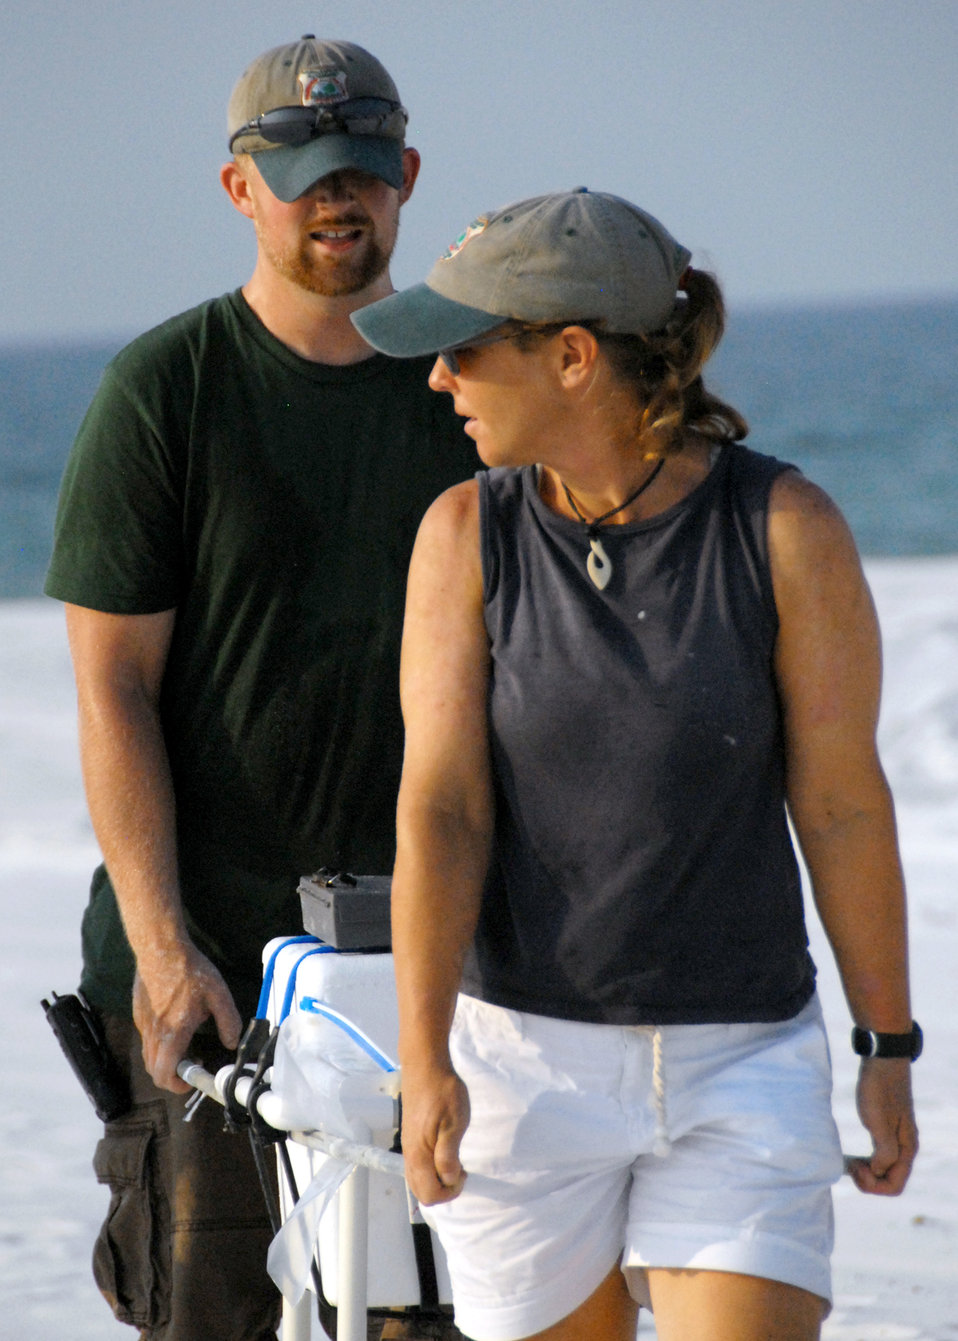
Sea turtles

Kathy Gault and Dusty Varble carry out a cooler filled with sea turtle eggs after removing them from their nest Aug. 2, 2010, on a beach at Eglin Air Force Base, Fla. The eggs will be transported to the east coast so the turtles can be released without the threat of encountering oil from the spill in the Gulf of Mexico. Ms. Gault and Mr. Varble are both 96th Civil Engineer Squadron biologists.